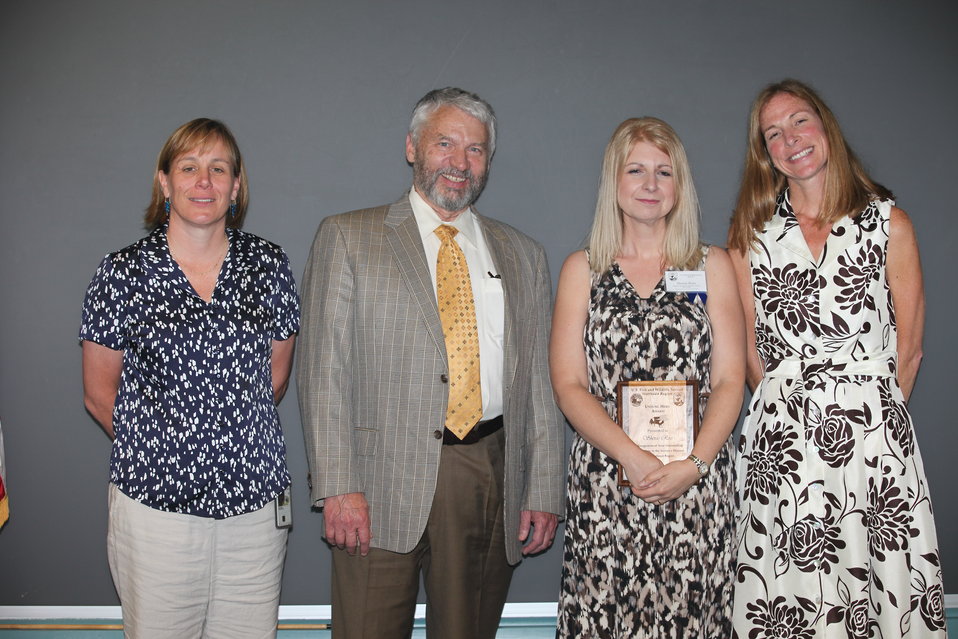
Sheree Ross of the Southern New England - New York Bight Coastal Program recieved a Region 5 Unsung Hero Award.
From left to right: Deputy Regional Director Deb Rocque, Deputy Director Rowan Gould, Laura Perlick, and Regional Director Wendi Weber